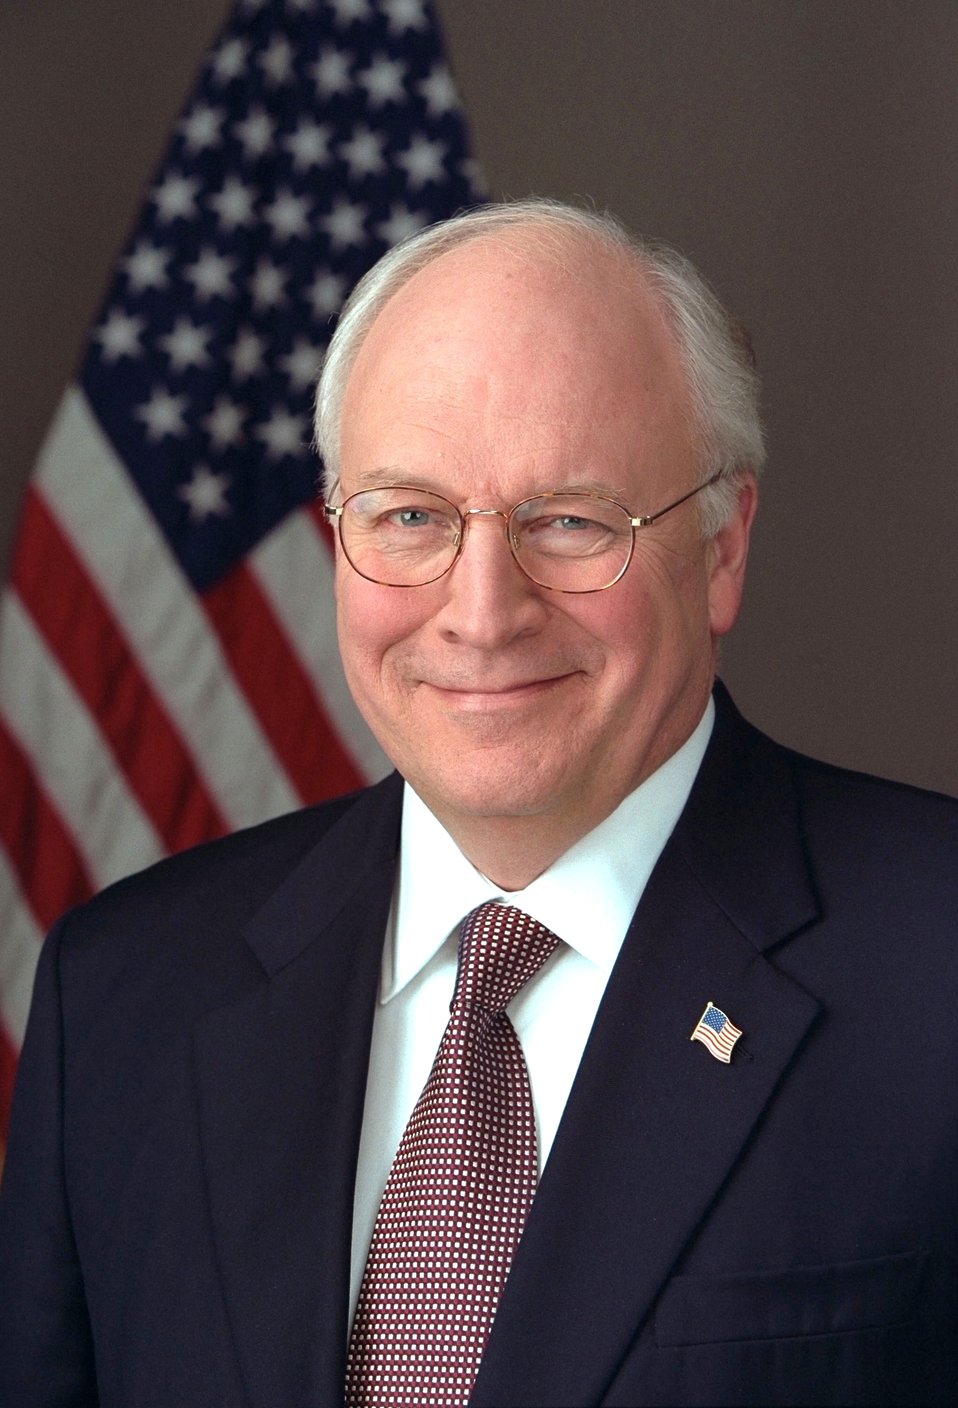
Vice President Richard B. Cheney